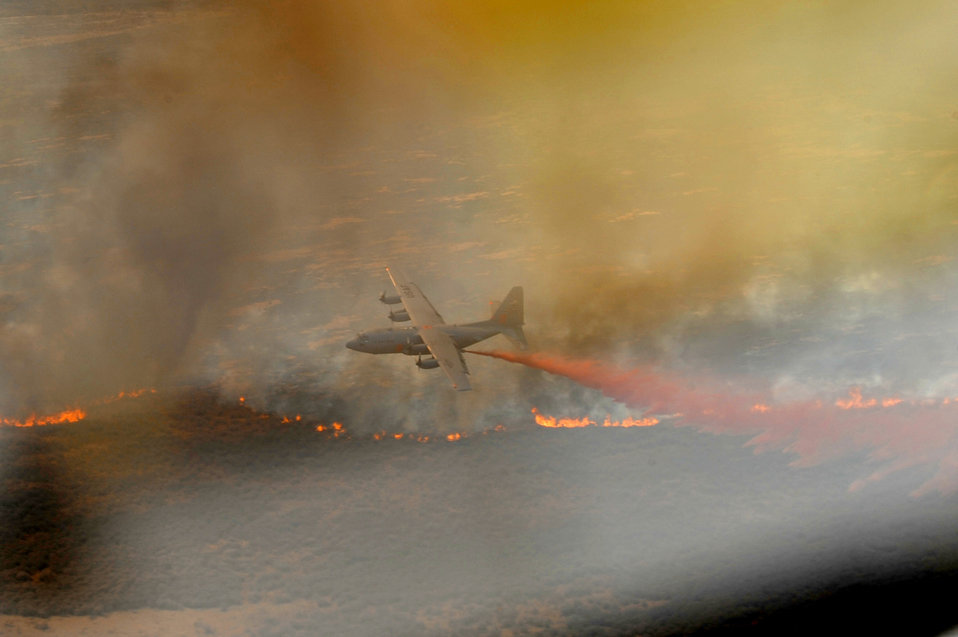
Texas Wildfires

A Modular Airborne Firefighting System-equipped C-130 Hercules drops fire retardant April 27, 2011, onto a West Texas wildfire. The wildfires have spread across various parts of Texas and have burned more than 1,000 square miles of land.